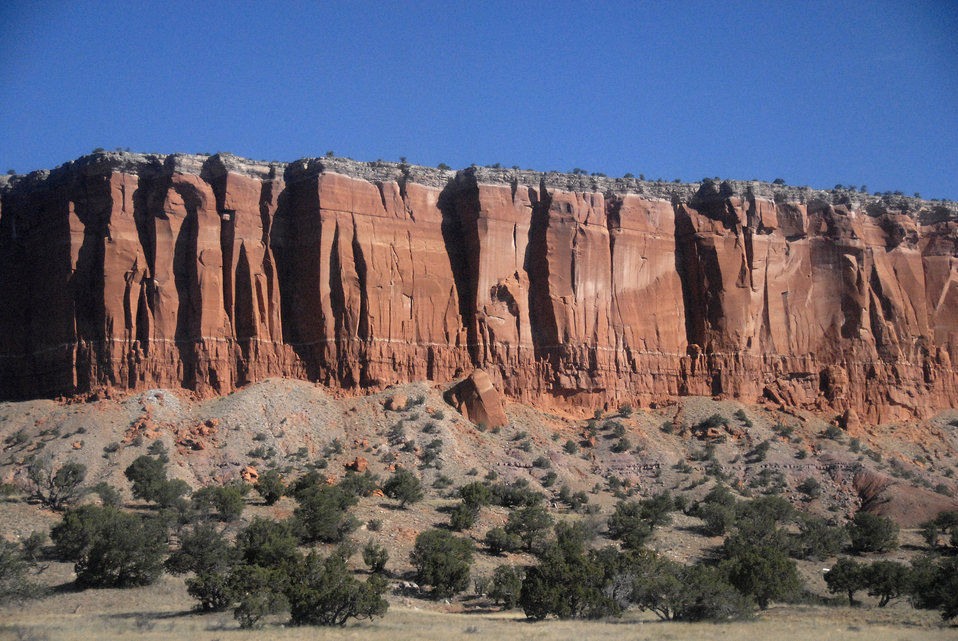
Impressive red rock formations were visible while traveling along interstate US 40 in New Mexico on September 9, 2008.